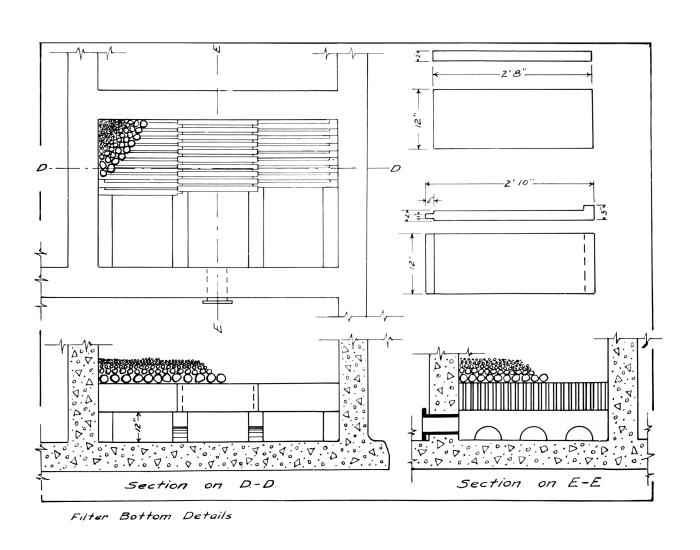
This historic 1922 diagram depicted a plan for a small municipal Minnesotan water filtration plant. This sketch showed the sand filter located in the bottom of the plant, in detail. Other views of this filtration plant can be seen in PHIL 8645, 8646, 8647, 8648 images.